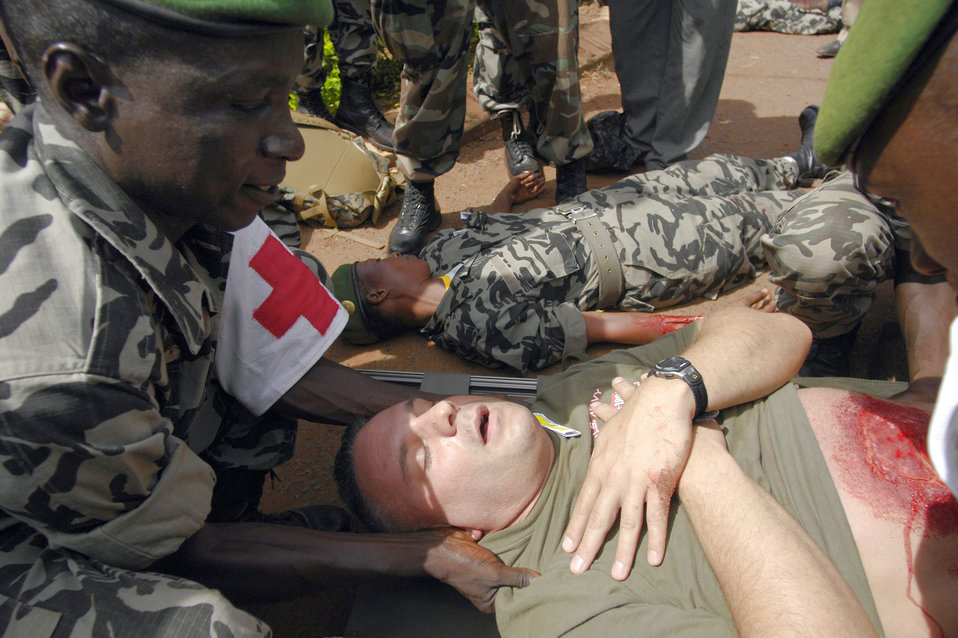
American and African medical personnel train together

Malian medical personnel prepare to move U.S. Navy Petty Officer 3rd Class Scott Ott July 18 during a simulated mass casualty accident during MEDFLAG 08 in the village of Kati, Mali. More than 90 servicemembers deployed to Bamako, Mali, for MEDFLAG 08, a multi-national medical training exercise designed to enhance medical capabilities and readiness for U.S. and African Forces. Petty Officer Ott is deployed from the 4th Dental Battalion, Sacramento Naval Operations Support Center, Calif.